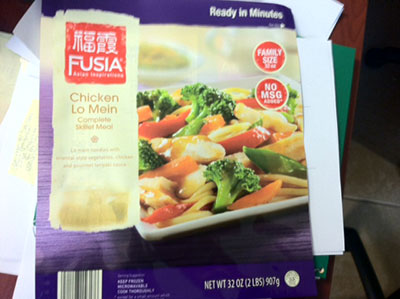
RECALLED - Skillet Meals

November 4, 2013 – Product Recall – Gourmet Express LLC. Voluntarily Recalls 32 Ounce Packages of 'Fusia Chicken Lo Mein' and 21 Ounce Packages Of “Bremer 3 Cheese Chicken” and “Bremer Garlic Shrimp' Due to Possible Undeclared Eggs.